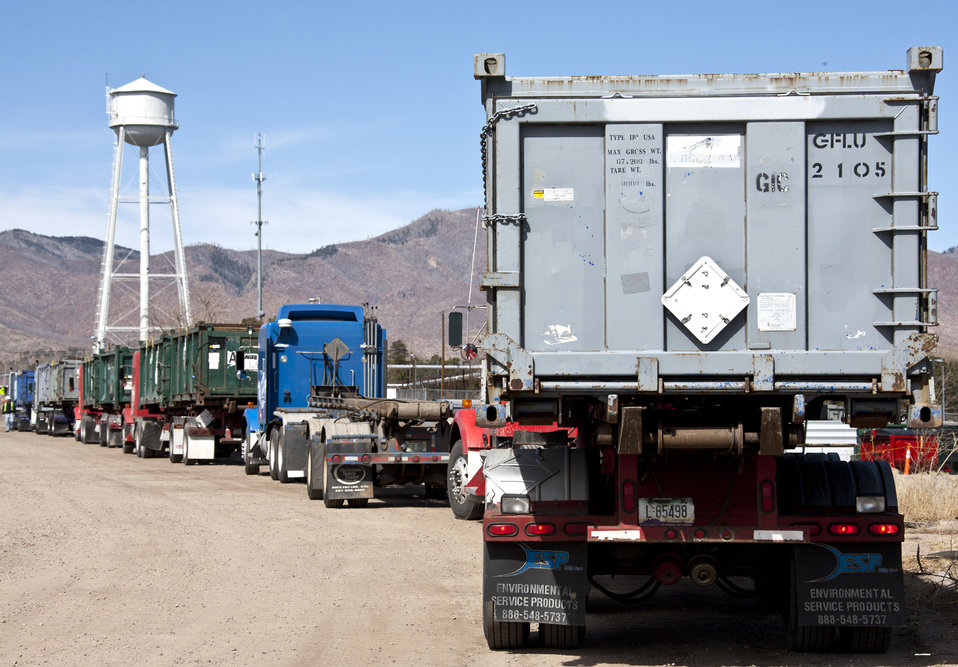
Waste Removal at Los Alamos

Trucks have logged more than 100,000 miles each week hauling waste from the Los Alamos National Laboratory’s Technical Area 21 projects.